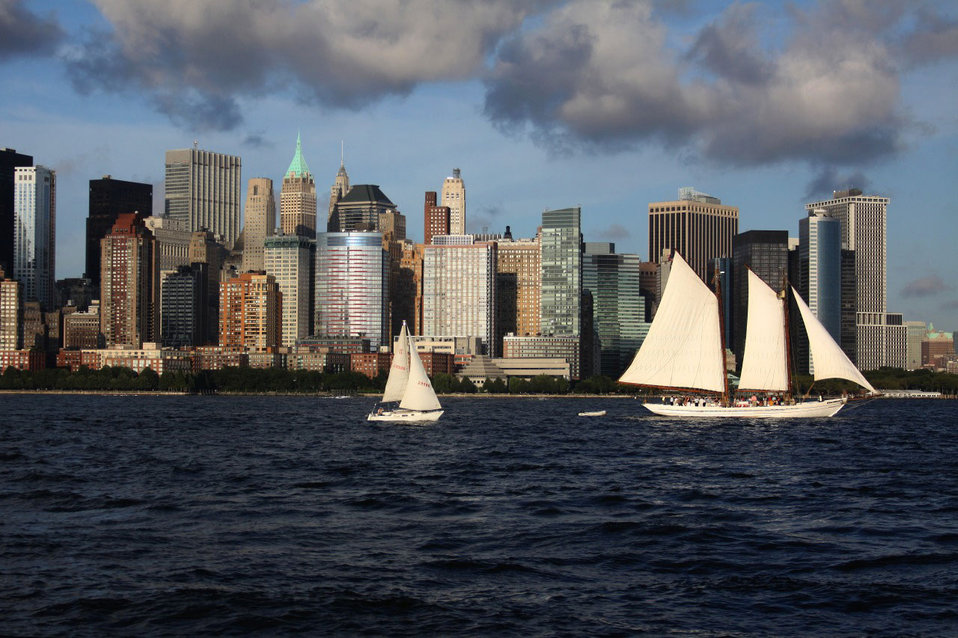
Sailboats

Boats on river sailing to the open ocean.